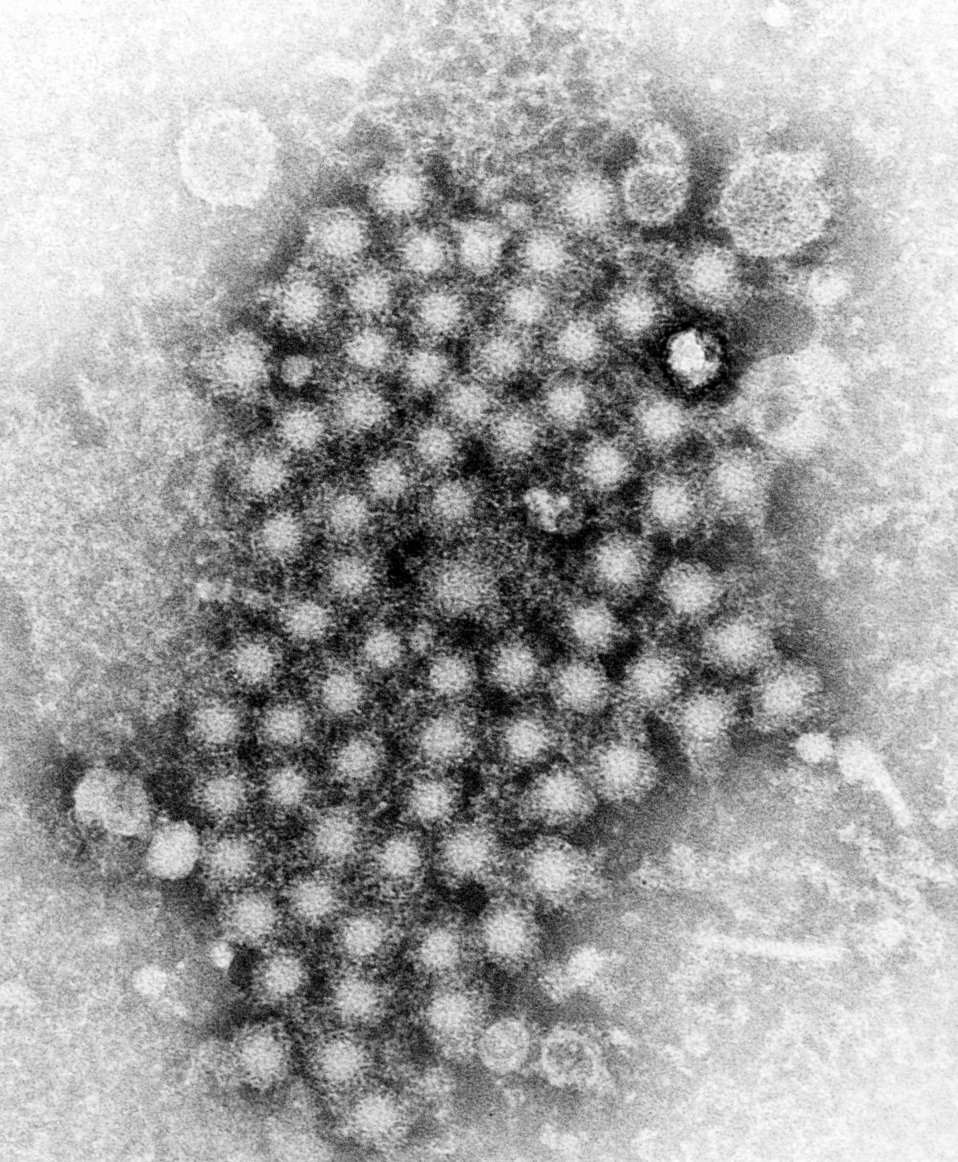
This transmission electron micrograph (TEM) revealed numerous hepatitis virions, of an unknown strain of the organism. In the United States, viral hepatitis is an important public health problem because it causes serious illness, it affects millions, and it has a close connection with HIV. There are five identified types of viral hepatitis and each one is caused by a different virus. In the United States, hepatitis A, hepatitis B and hepatitis C are the most common types.